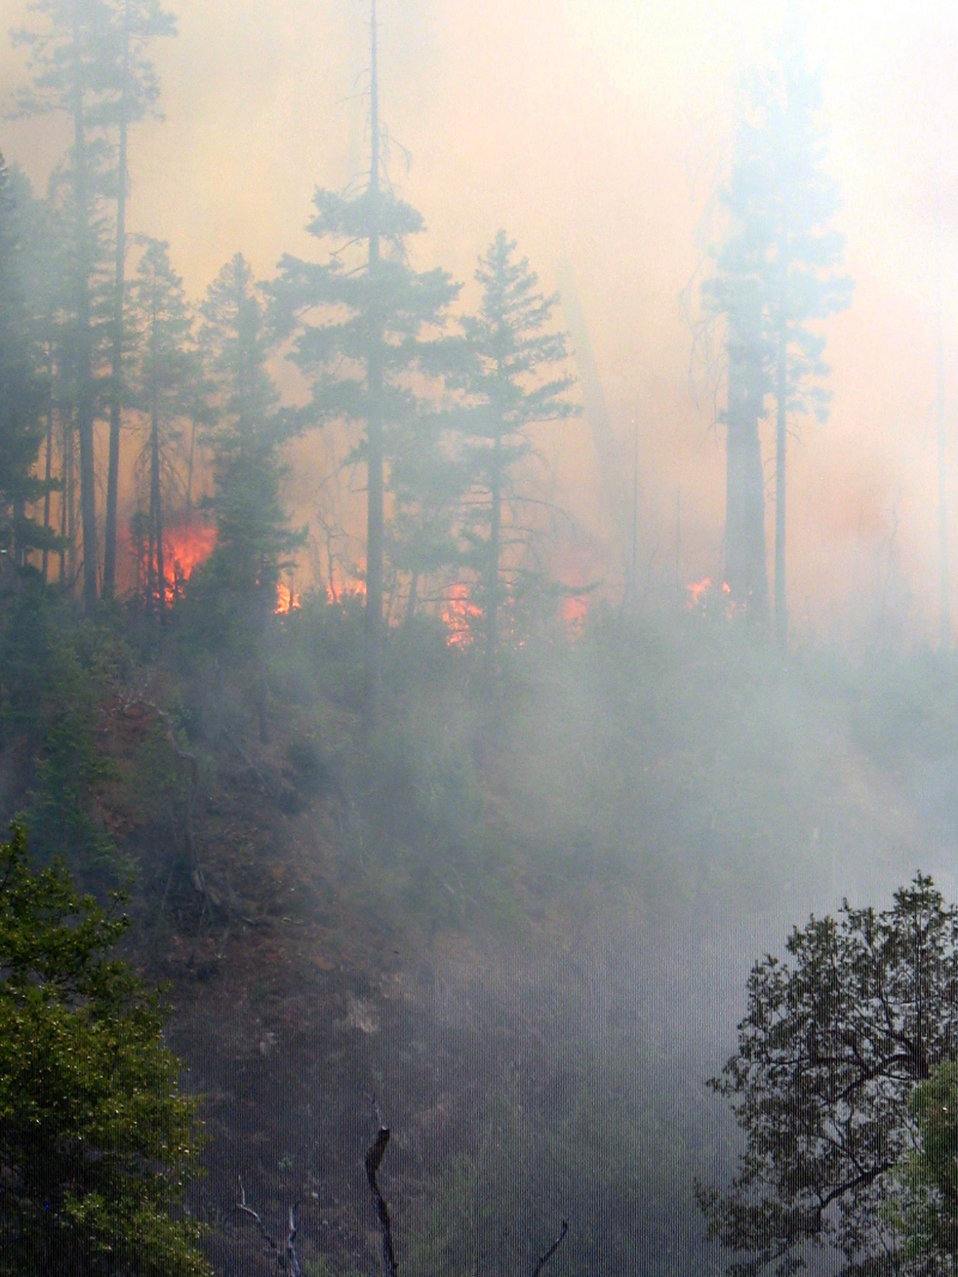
The Labrador Fire in the Rogue River-Siskiyou National Forest near Cave Junction, OR began on Jul. 26, 2013 by lightning has consumed 2,020 acres.